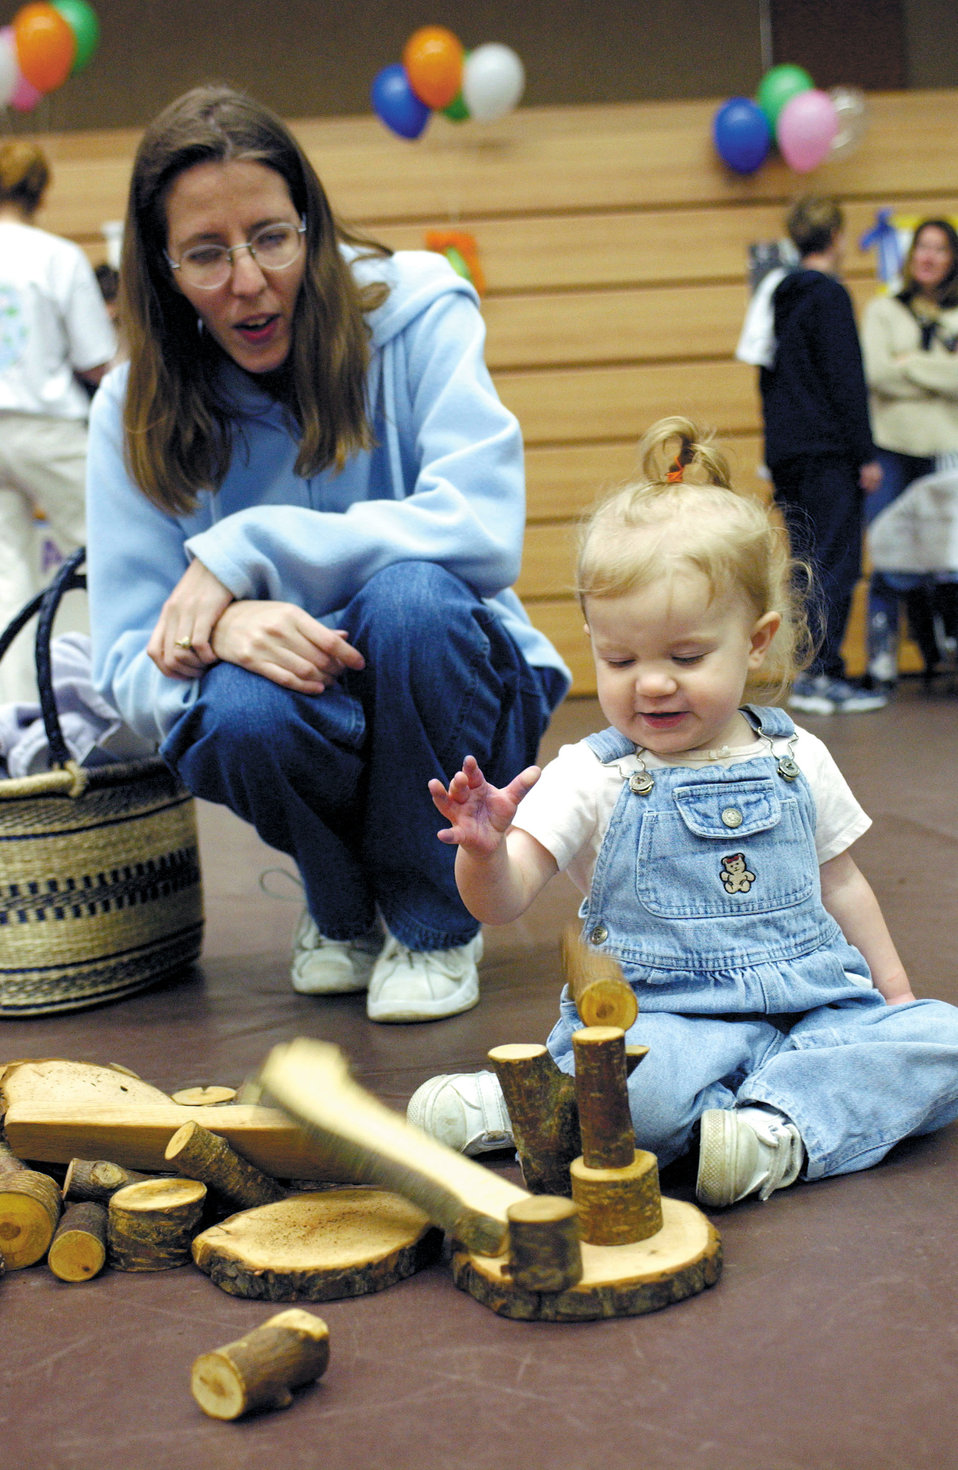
Block party

SPANGDAHLEM AIR BASE, Germany -- B.J. McDonald watches her daughter, Rachel, play with wood blocks during a block party here April 24. The party was part of the Month of the Military Child celebration. Rachel's father is Staff Sgt. Jonathan McDonald of the 52nd Mission Support Squadron.